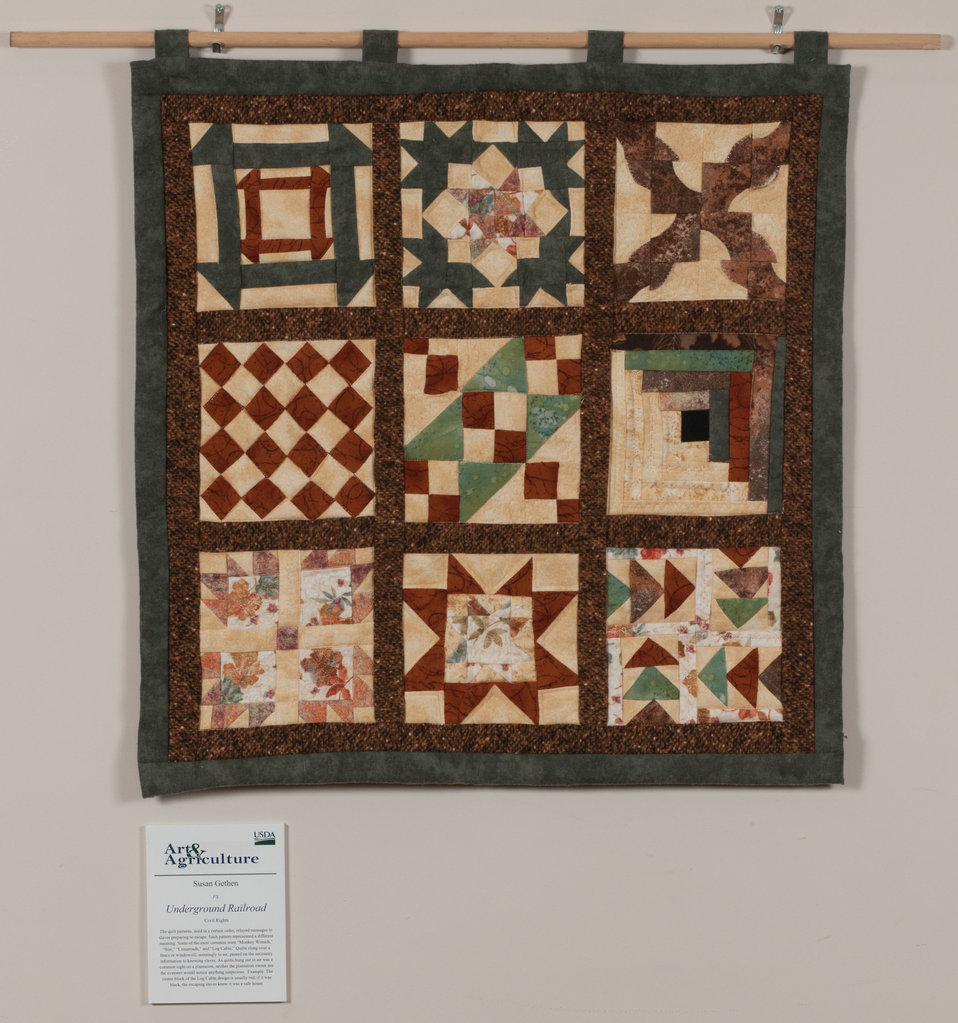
Online Viewer's Choice entries of the 2013 Art & Agriculture, Tuesday, July 9, 2013, in the South Building, Washington, D.C. Themes were expressed by employees from across the department and the contest was open to full-time and part-time USDA employees. Winning artwork will be displayed till the end of the year. U.S. Artistic expression is a creative outlet that is vital for an individual to grow and develop.